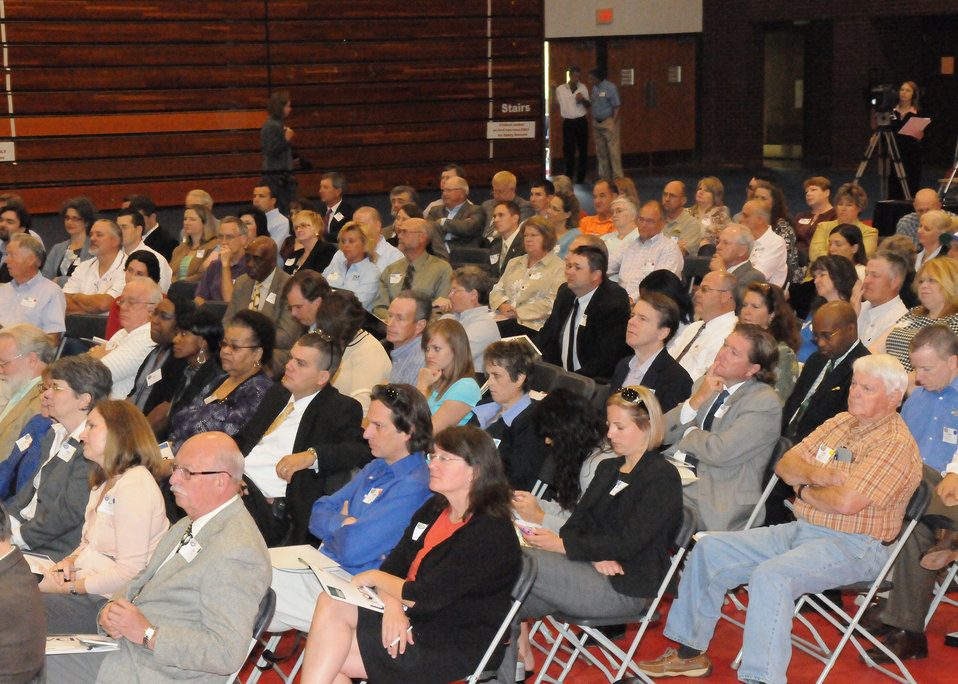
A large crowd of farmers and producers attended the National Rural Summit held at Jefferson College in Hillsboro, MO., on Thursday, June 3, 2010. USDA photo 10di1386-46